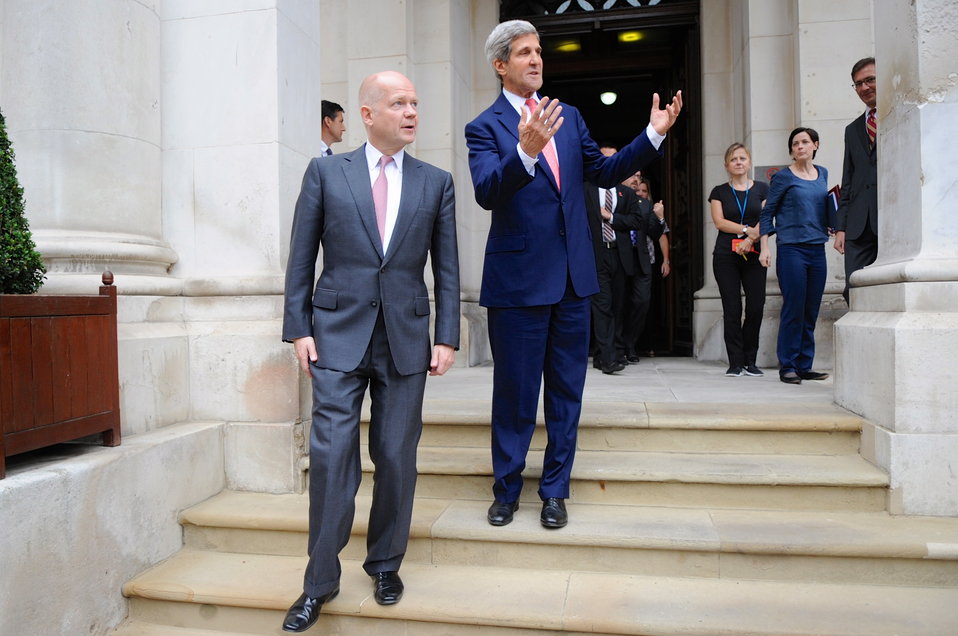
Secretary Kerry Remarks on Overcast London Weather

U.S. Secretary of State John Kerry remarks to British Foreign Secretary William Hague about the overcast London sky as they exit the Foreign and Commonwealth Office after a breakfast meeting and news conference on September 9, 2013.